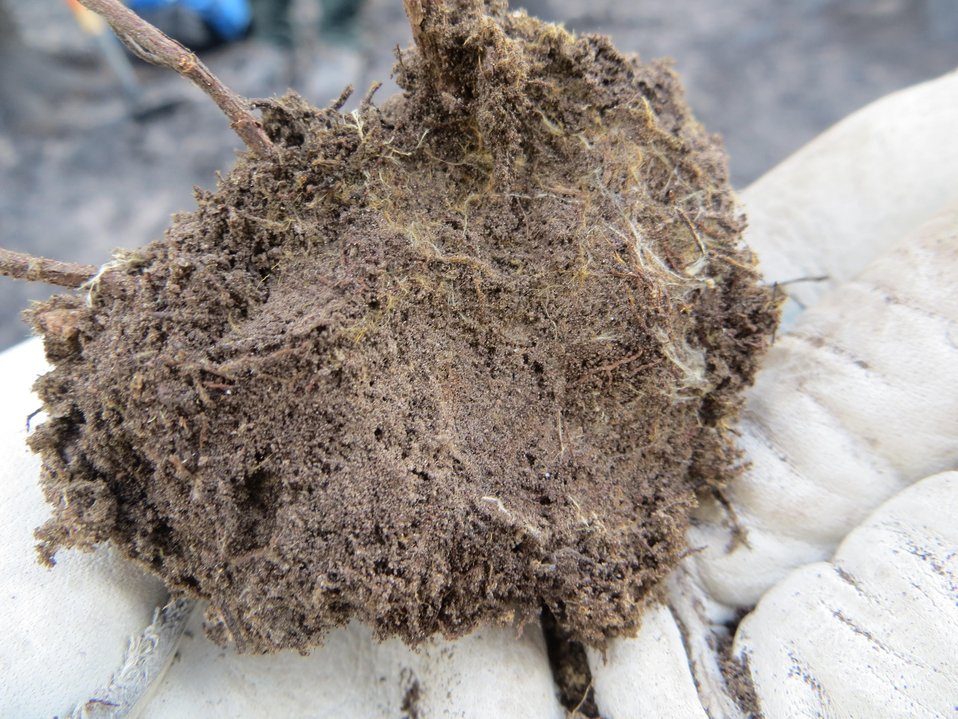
A Burned Area Emergency Response (BAER) team member inspects a soil sample after the Thompson Ridge Fire in the Sante Fe National Forest in New Mexico. The Thompson Ridge Fire in the Sante Fe National Forest approximately 10 miles north of Jemez, NM began on May 31, 2013 by human ignition consumed over 23, 965 acres. BAER is a rapid assessment of burned watersheds by a BAER team to identify imminent post-wildfire threats to human life and safety property and critical natural or cultural resources on National Forest System lands and take immediate actions to implement emergency stabilization measures before the first major storms. Fires result in loss of vegetation exposure of soil to erosion and increased water runoff that may lead to flooding increased sediment debris flows and damage to critical natural and cultural resources. BAER team members implement seeding and mulching installation to prevent erosion, erect temporary water run-off control structures that will protect recovering areas, and installation of warning signs, replace safety related facilities, remove safety hazards, prevent permanent loss of habitat for threatened and endangered species, and prevent the spread of noxious weeds and protect critical cultural resources.